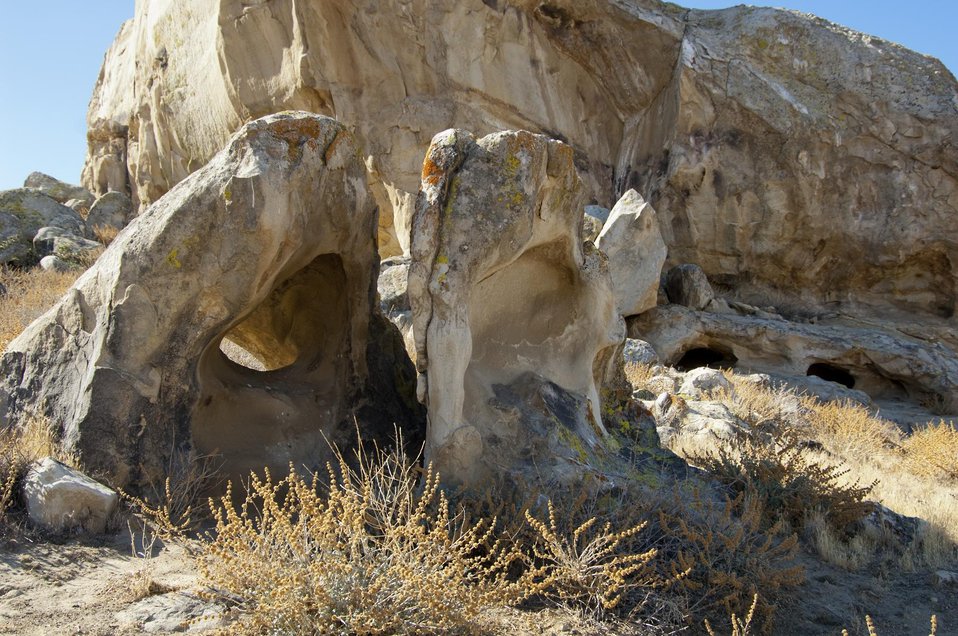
Painted Rock, Formation on the Carrizo Plain 3